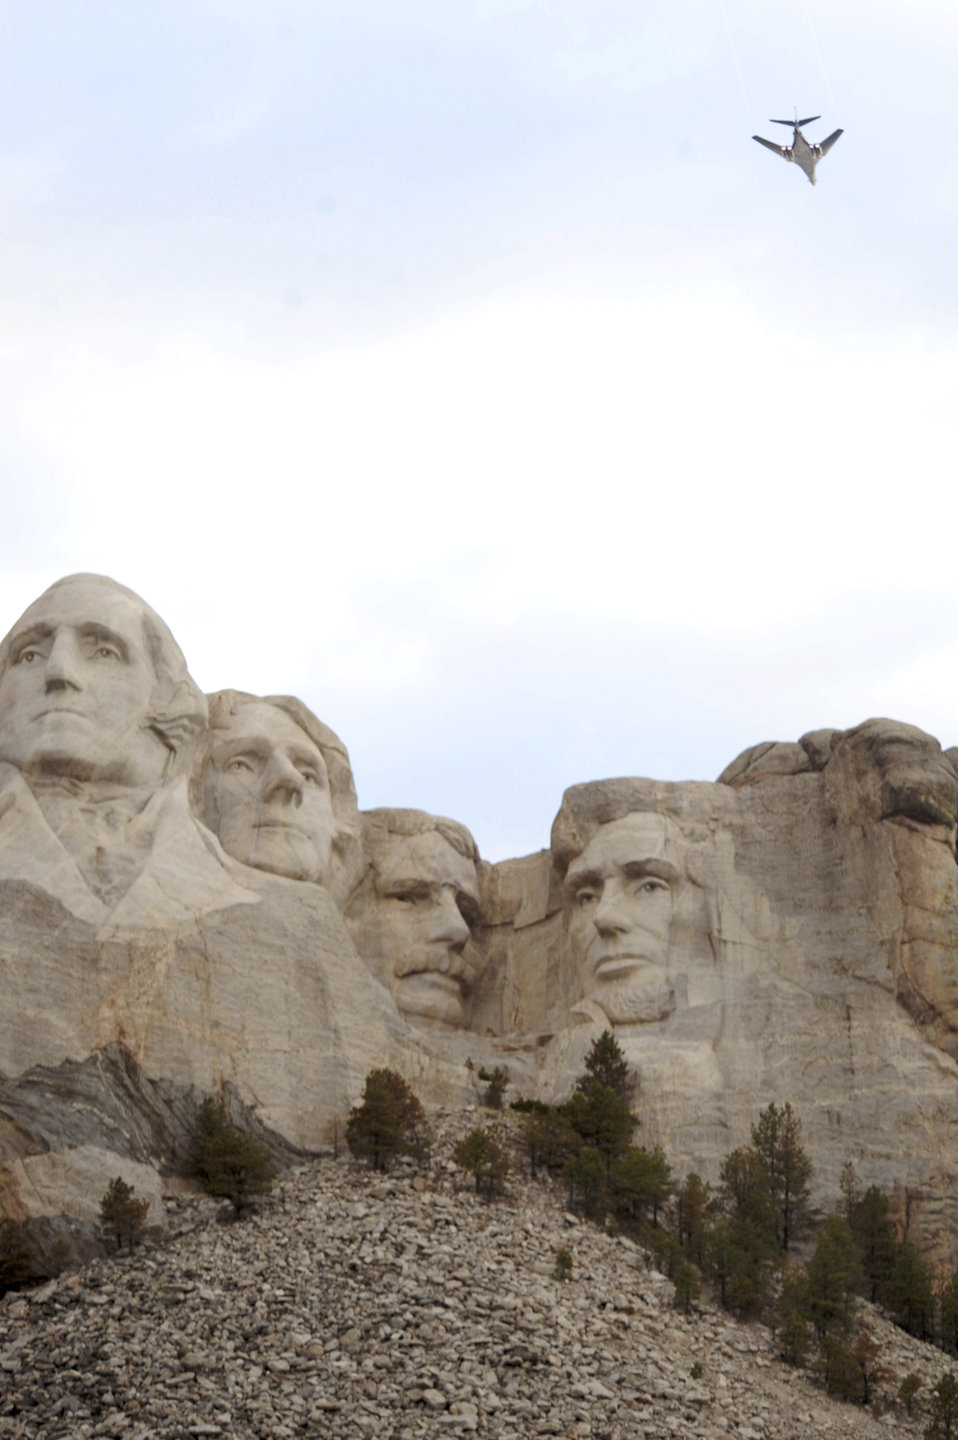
Scanning the skies

A B-1B Lancer flies over Mount Rushmore National Memorial near Ellsworth Air Force Base, S.D. July 3, 2010.